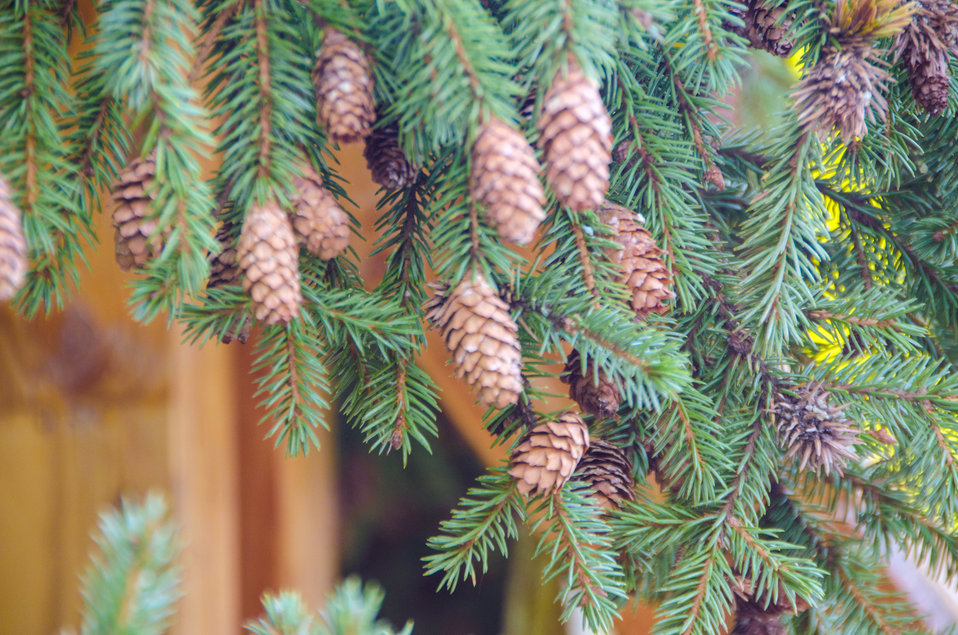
The official 2013 Capitol Christmas Tree is an 88-foot tall Engelmann spruce that was harvested at Colville National Forest in Washington on Nov. 1, 2013.